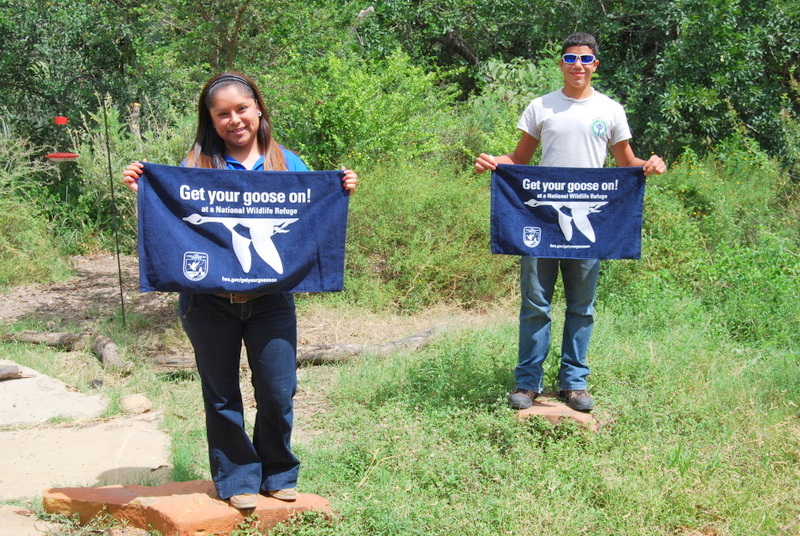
Get Your Goose On!

Photo taken at Santa Ana National Wildlife Refuge in southern Texas.